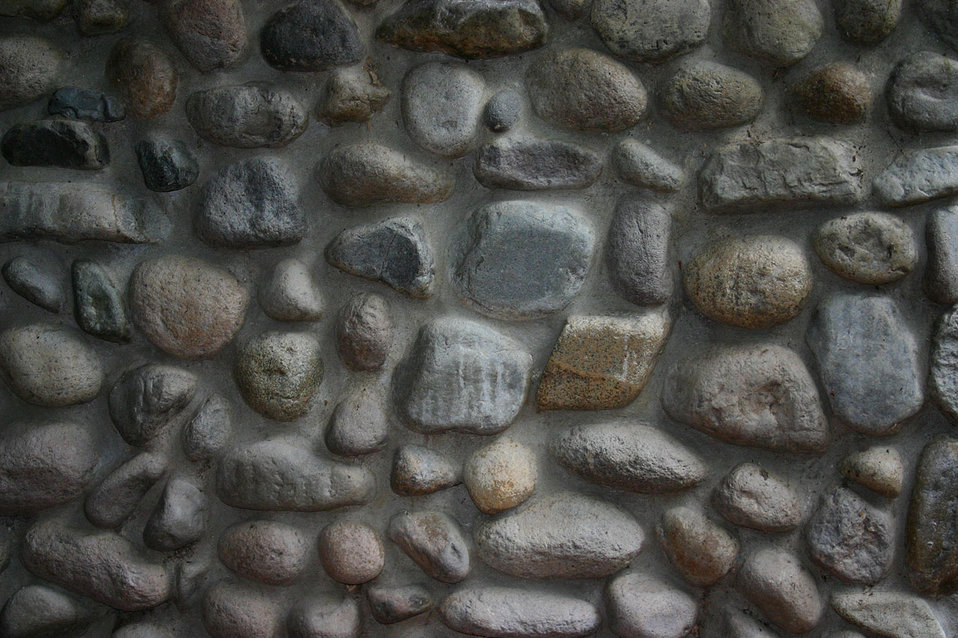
Rock wall

Stones embedded in cement.